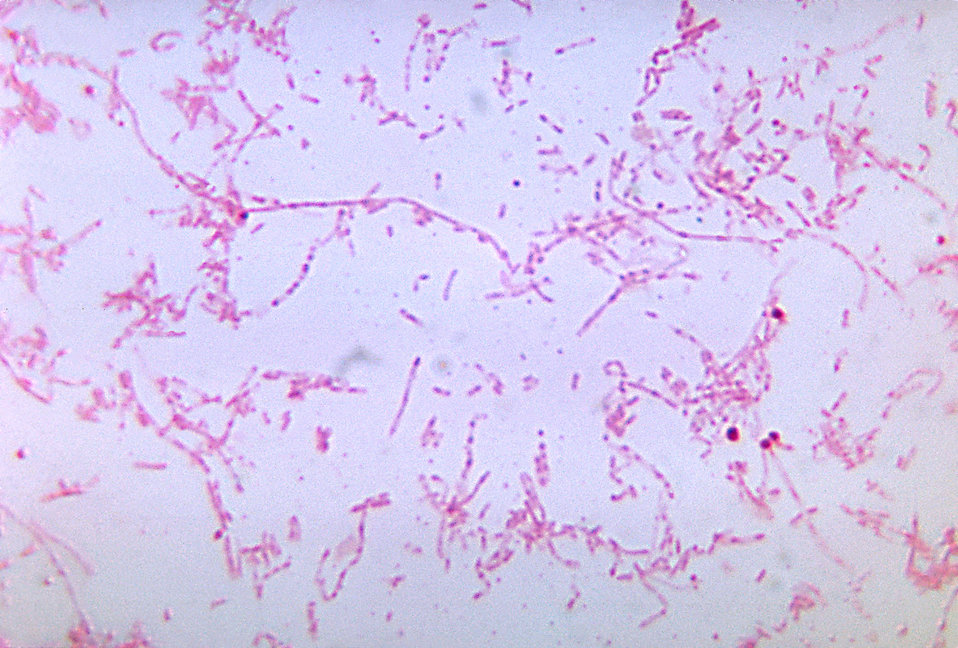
This photomicrograph shows Fusobacterium necrophorum bacteria cultured in a thioglycollate medium for 48 hours.